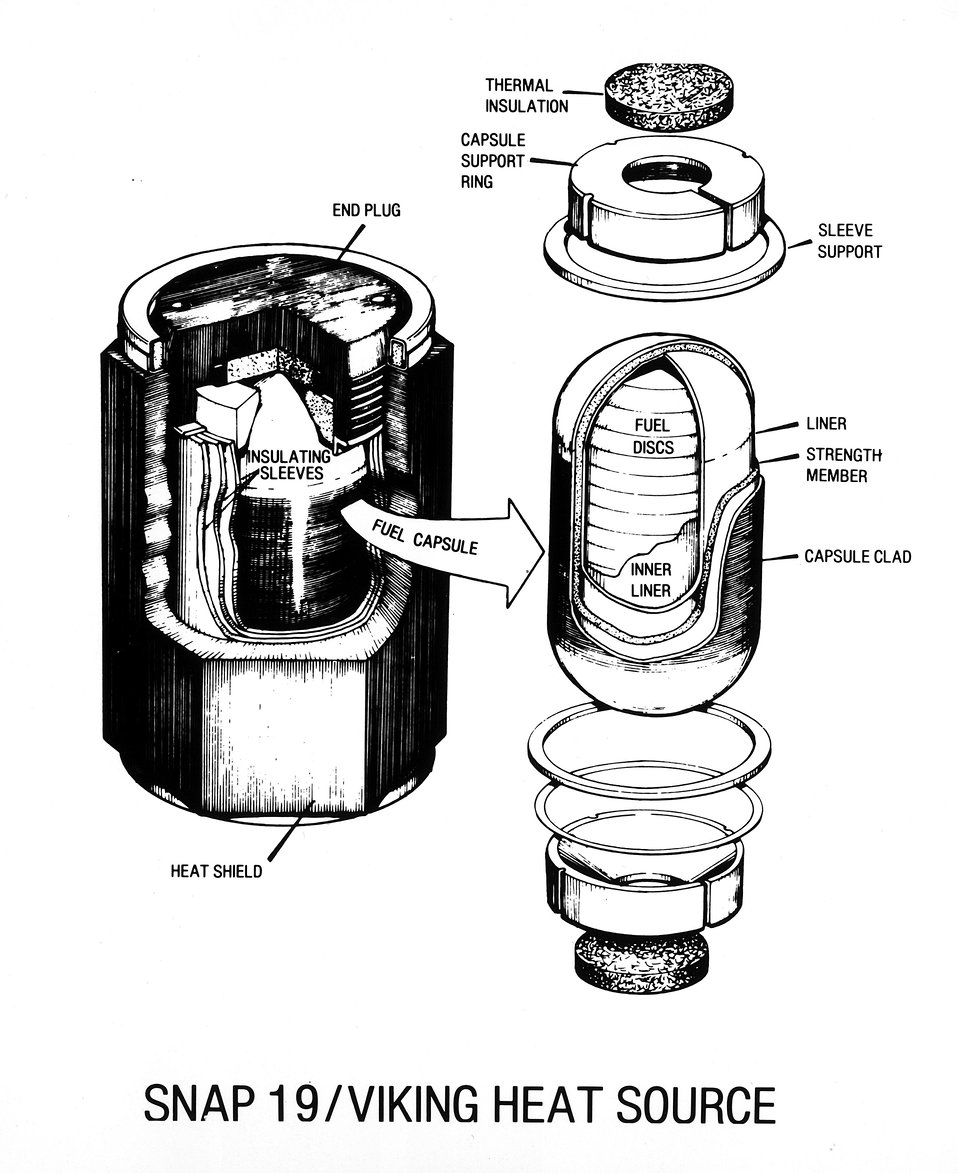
Cutaway of the Plutonium-238 heat source of the SNAP-19/Viking radioisotope thermometric generator (atomic battery).